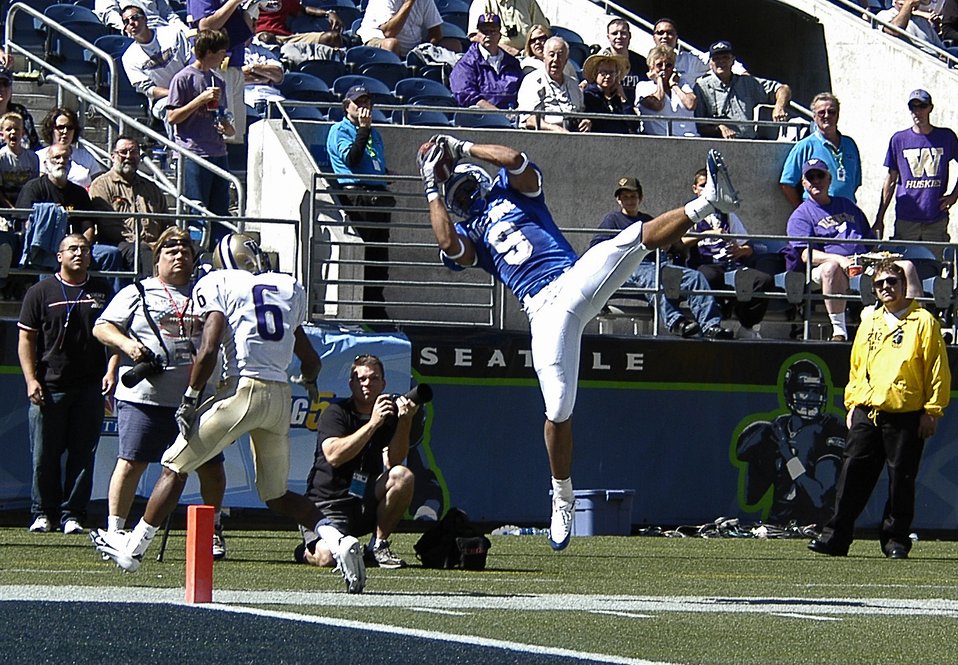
Falcons win opener

SEATTLE -- Air Force Academy Falcon wide receiver Jason Brown makes a leaping catch at the University of Washington 2-yard line in front of Huskies cornerback Matt Fountaine. The Cadets defeated the Huskies in the season opener for both teams, 20-17.